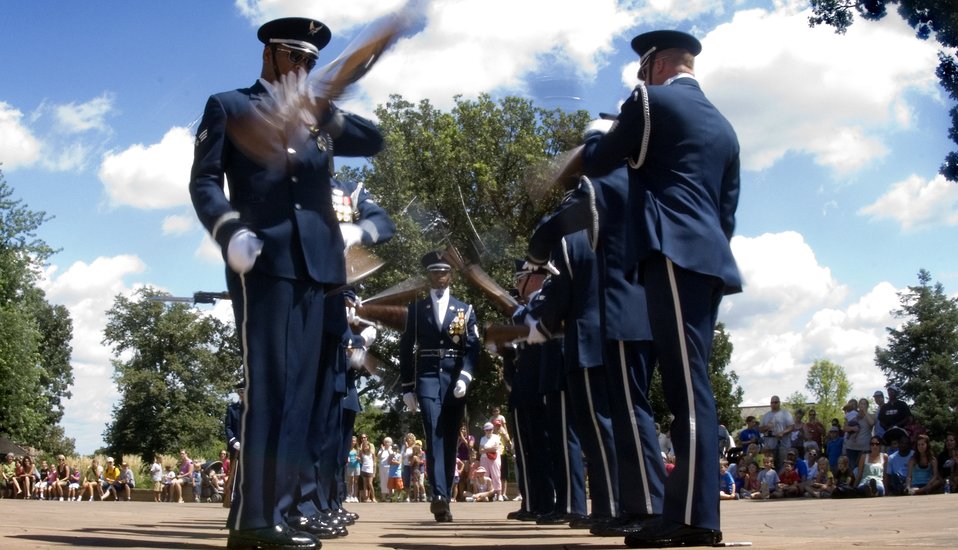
Air Force Week in the Heartland reaches out to Omaha zoo

Tech. Sgt. Robert Jones walks the gauntlet of flying M1 rifles as Air Force Honor Guard drill team members perform Aug. 12 for visitors of the Henry Doorly Zoo in Omaha, Neb. Zoo visitors also had the chance to see the Do Something Amazing display featuring an F-16 Fighting Falcon, a motion simulator and video simulators during Air Force Week in the Heartland.